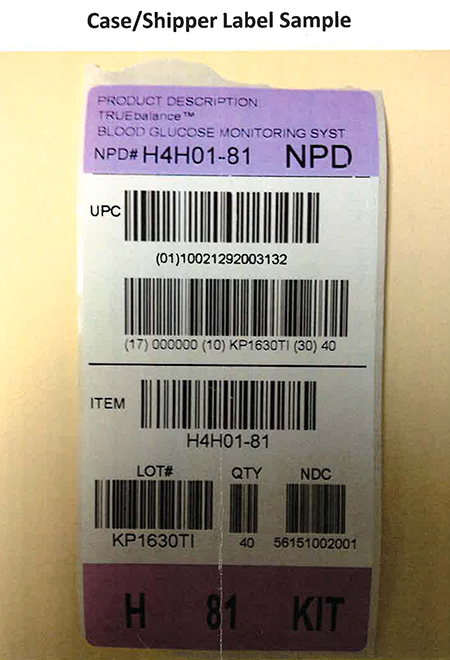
RECALLED – Blood Glucose Meters

January 2, 2014 – Product Recall – Nipro Diagnostics, Inc. Initiates Voluntary Recall of Certain TRUEbalance and TRUEtrack Blood Glucose Meters.